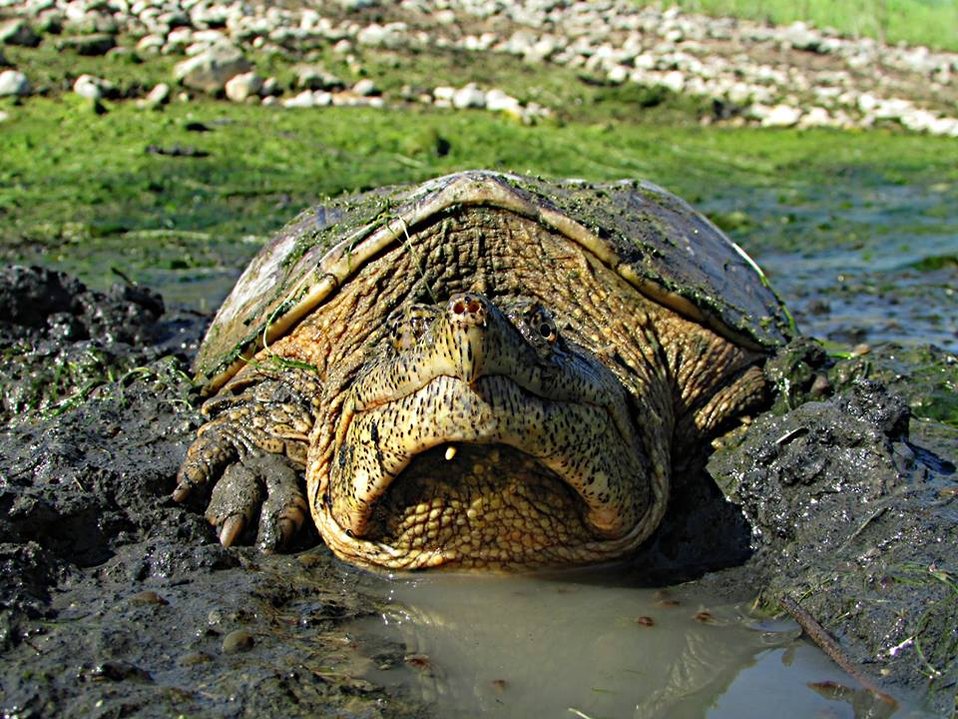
Grumpy

Here's a closeup of the top predator in our earth ponds! Snapping turtles will be coming out of hibernation in about two months when water temperatures get closer to 50 degrees.